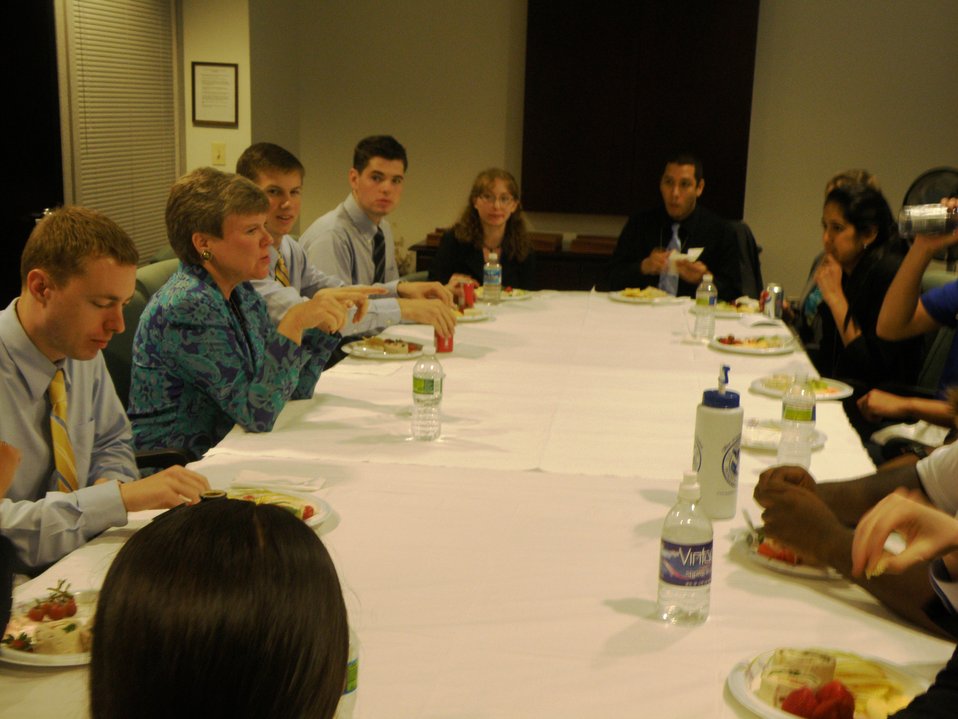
Assistant Secretary Gottemoeller Hosts a Lunch With Summer Interns

U.S. Assistant Secretary of State for Verification, Compliance, and Implementation Rose Gottemoeller hosts a lunch for Arms Control and International Security, summer interns at the U.S. Department of State in Washington, D.C., on July 16, 2010.